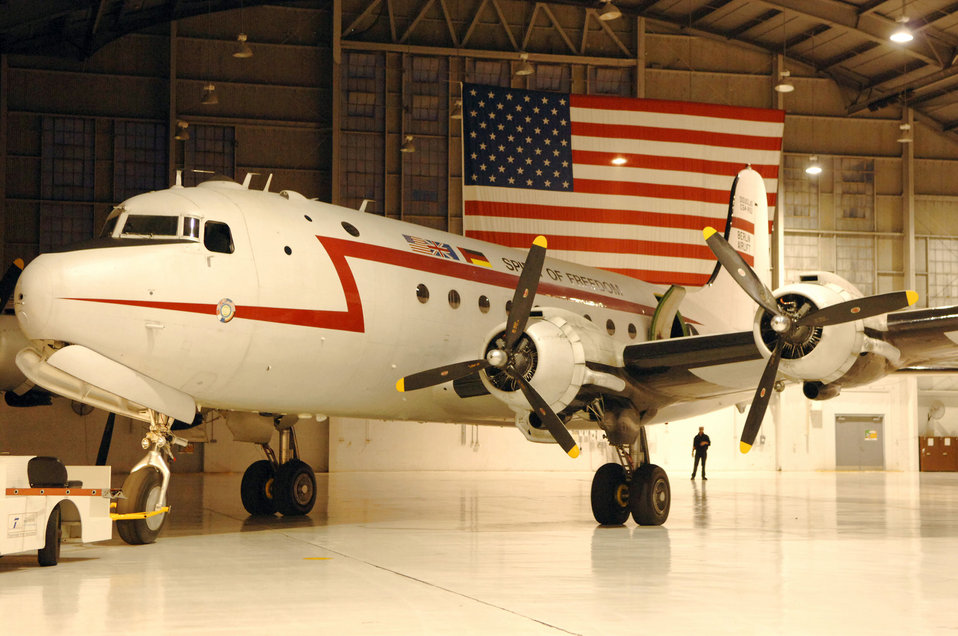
Phoenix Rally celebrates 60th Anniversary of Berlin Airlift

The C-54 Skymaster